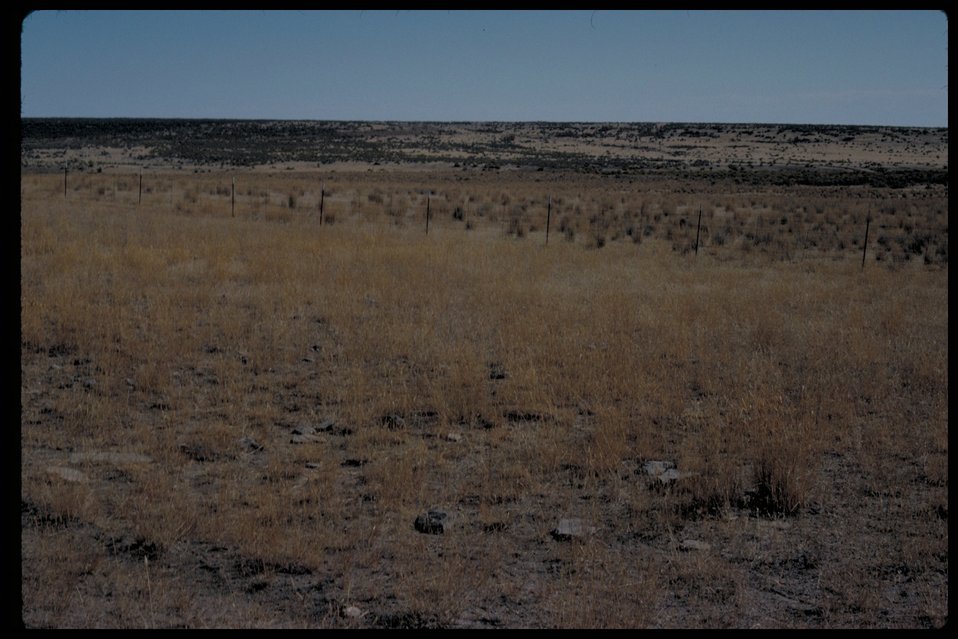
Oregon Trail Mass Grave near Rye Grass Creek Lower Snake River District